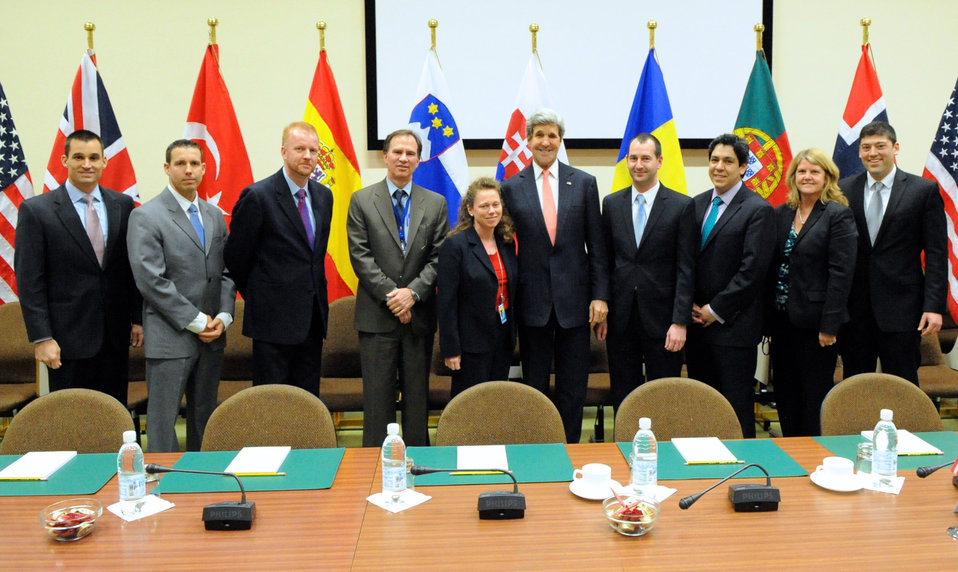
Secretary Kerry Thanks Staff of Mission NATO Following Ministerial Meetings

U.S. Secretary of State John Kerry poses with the staff of the U.S. Mission to NATO after thanking them for their support as he attended the NATO Ministerial Meetings in Brussels, Belgium, on April 1-2, 2014.